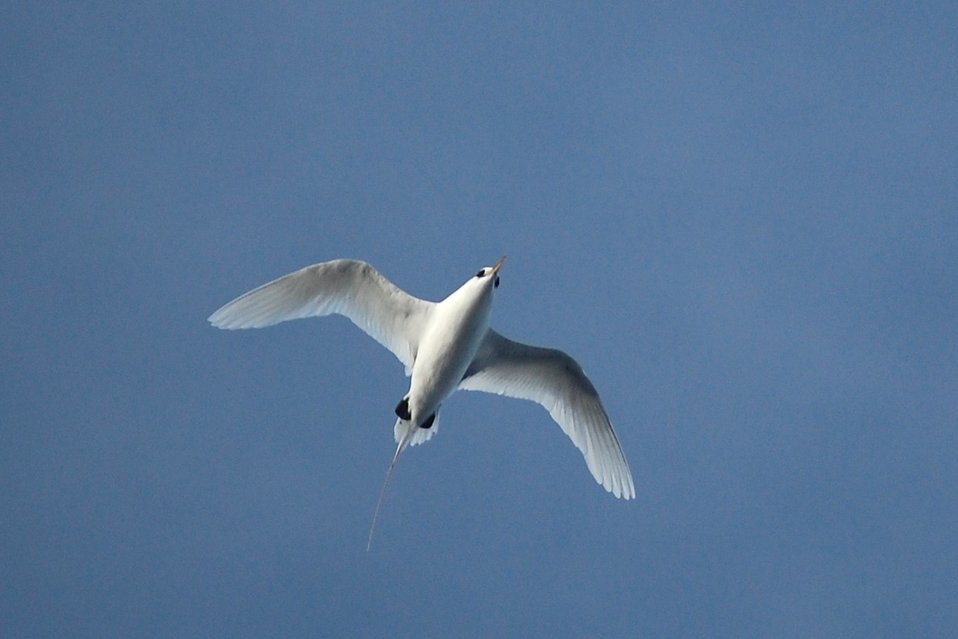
Tropic bird.